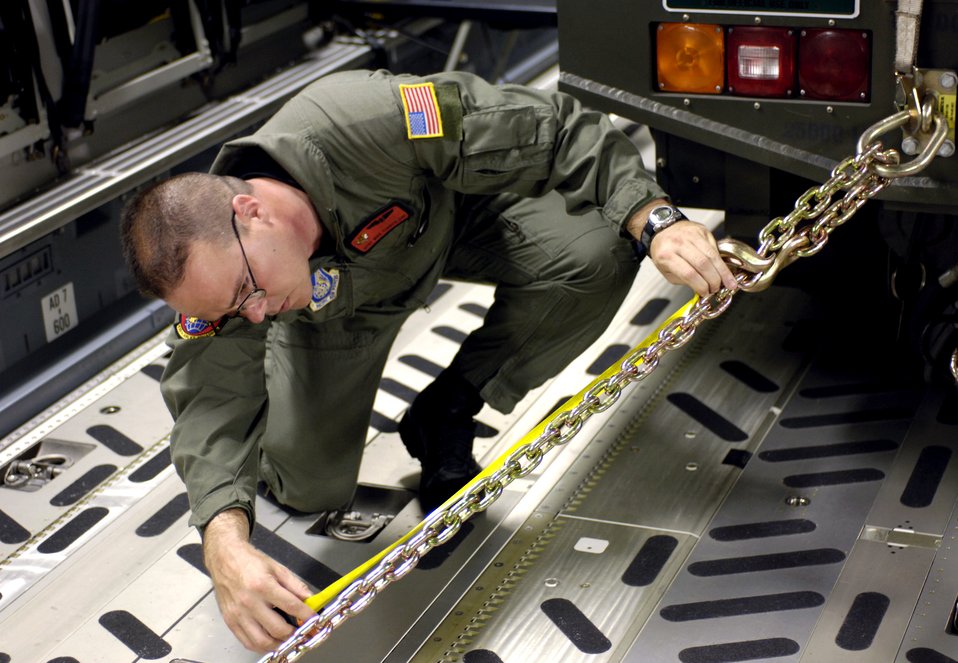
Loadmasters help reposition Australian Defense Forces

Master Sgt. Mike Cumberland measures a chain securing a vehicle loaded on a C-17 Globemaster III at Hickam Air Force Base, Hawaii, on Thursday, May 25, 2006. Sergeant Cumberland is a loadmaster with the 535th Airlift Squadron at Hickam. He is one of the Air Force crew members helping move equipment and troops from the Solomon Islands to Australia, repositioning Australian Defense Forces to support peace operations in East Timor.